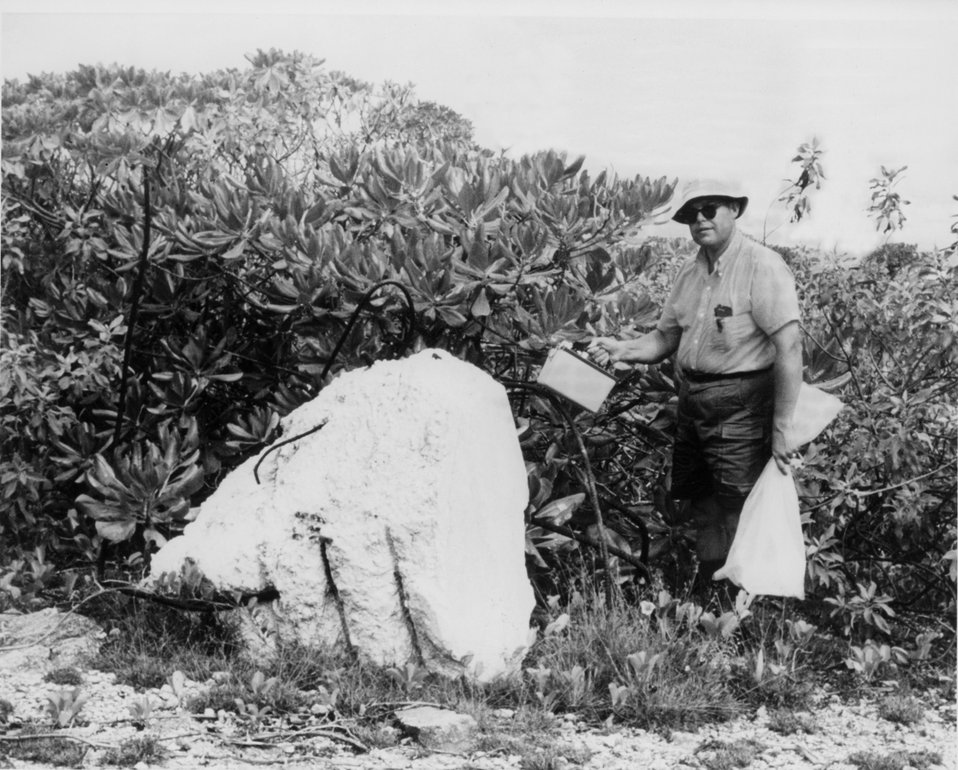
After testing the Bikini islands, scientists assured inhabitants could return ten years after the last nuclear test on the island.